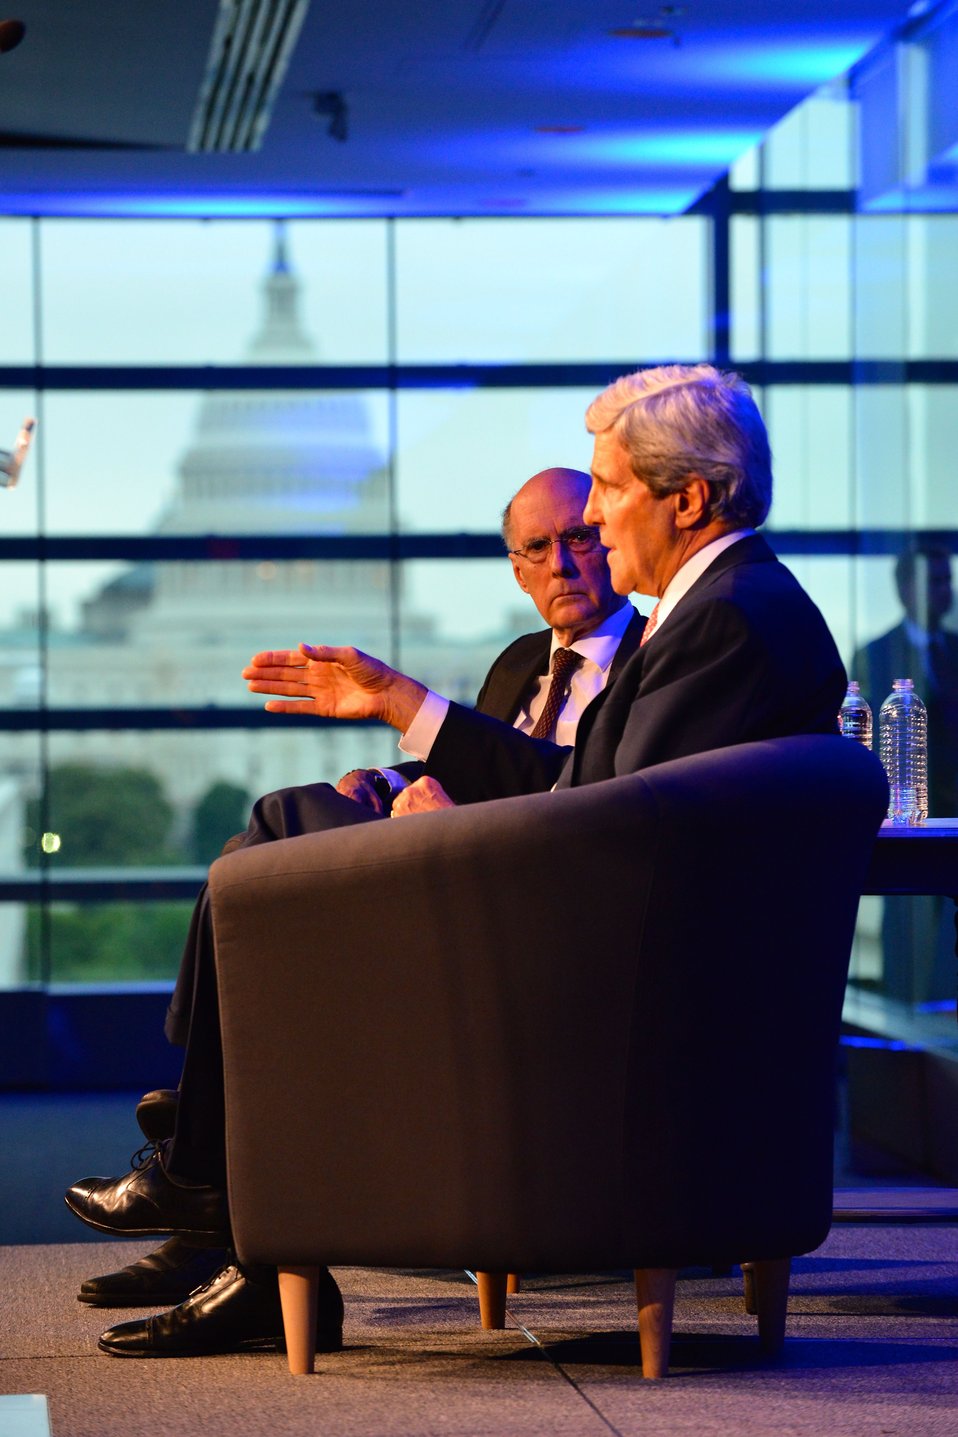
Secretary Kerry Meets With Brookings Board of Trustees and International Advisory Council

U.S. Secretary of State John Kerry meets with the Brookings Board of Trustees and International Advisory Council in Washington, D.C., on May 29, 2014.